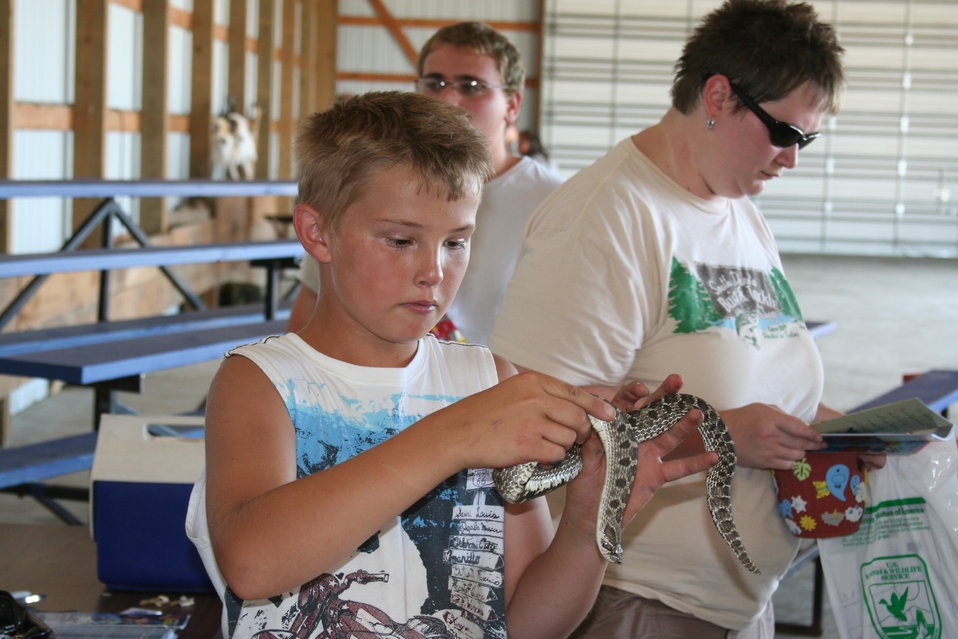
2011 Huron Prairie Fest